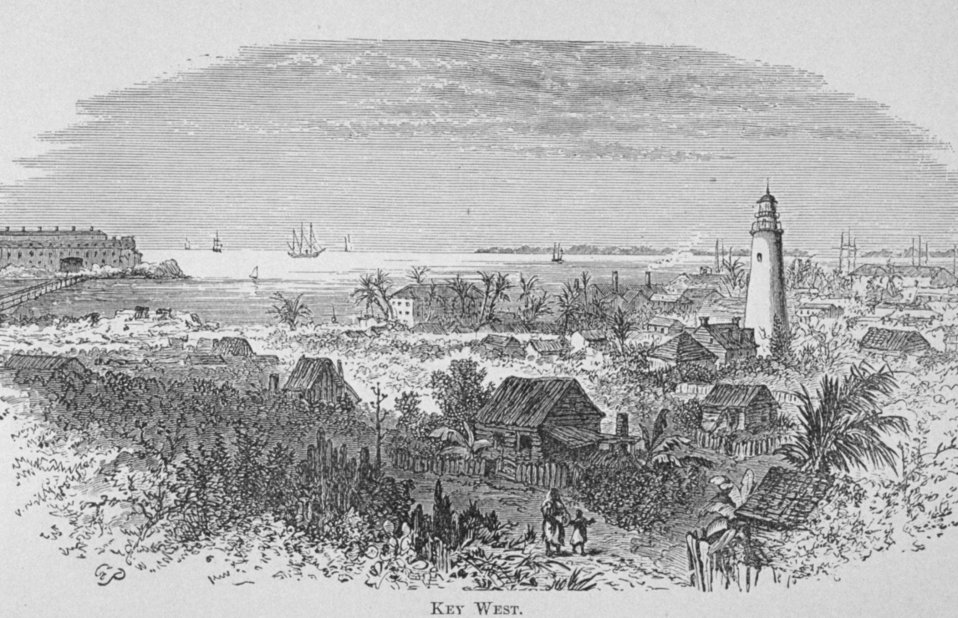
Key West - in 'Florida for Tourists, Invalids, and Settlers' by George M. Barbour, 1881. Library Call No. F316 .B23 1881. A view of the lighthouse as well as the old town Key West.